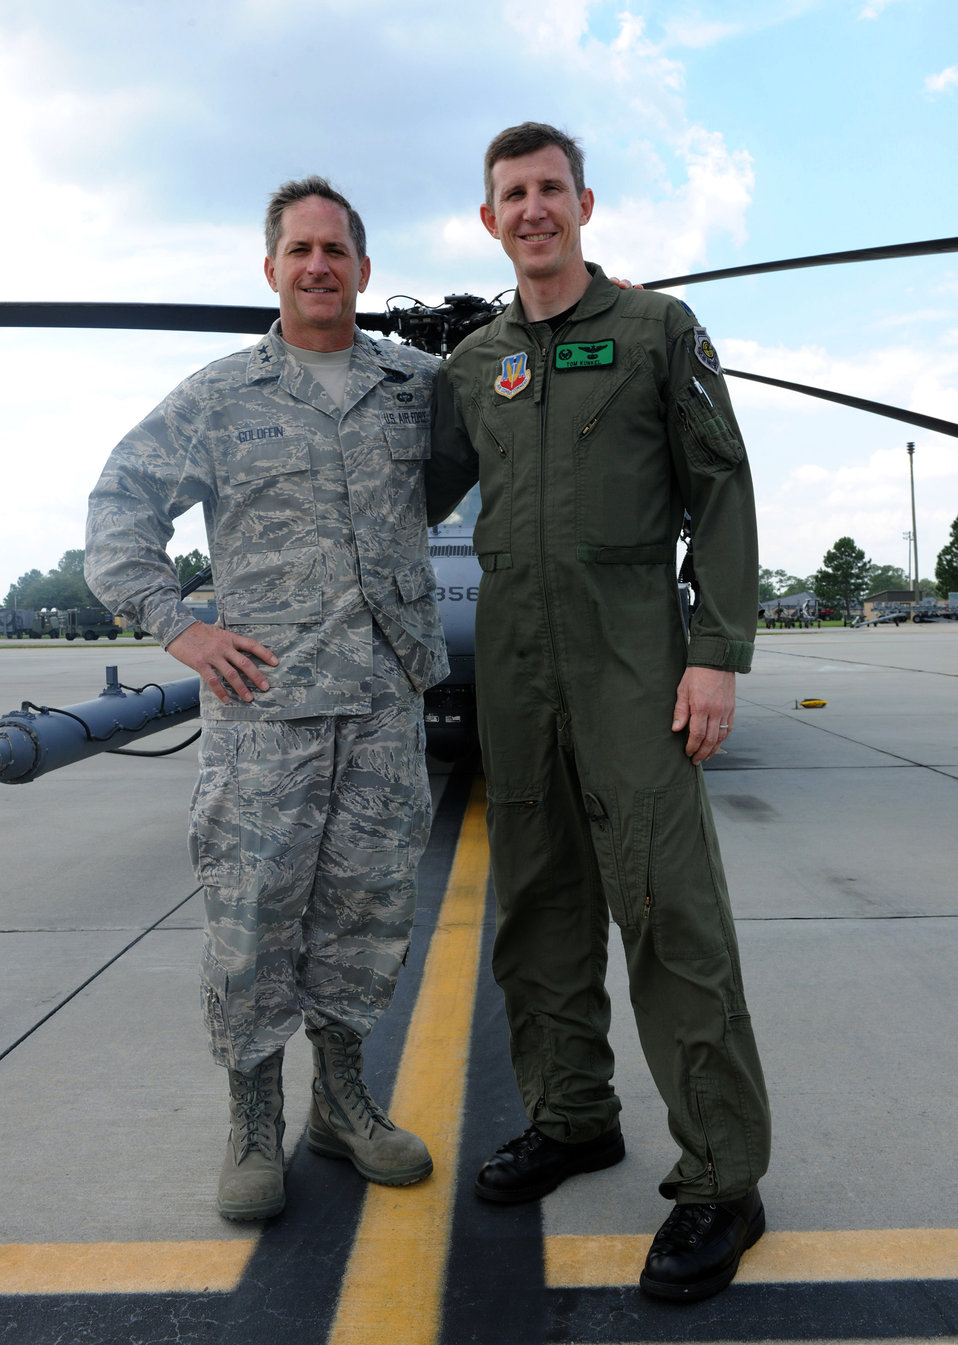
A close call to remember

Maj. Gen. David Goldfein and Lt. Col. Tom Kunkel stand in front of an HH-60G Pave Hawk Sept. 1, 2010, during the general's visit to Moody Air Force Base, Ga.. In May 1999, General Goldfein was shot down while flying over Serbia and Colonel Kunkel was able to rescue the general and bring him back home safely. General Goldfein is the Air Combat Command director of air and space operations. Colonel Kunkel is the 41st Rescue Squadron commander.